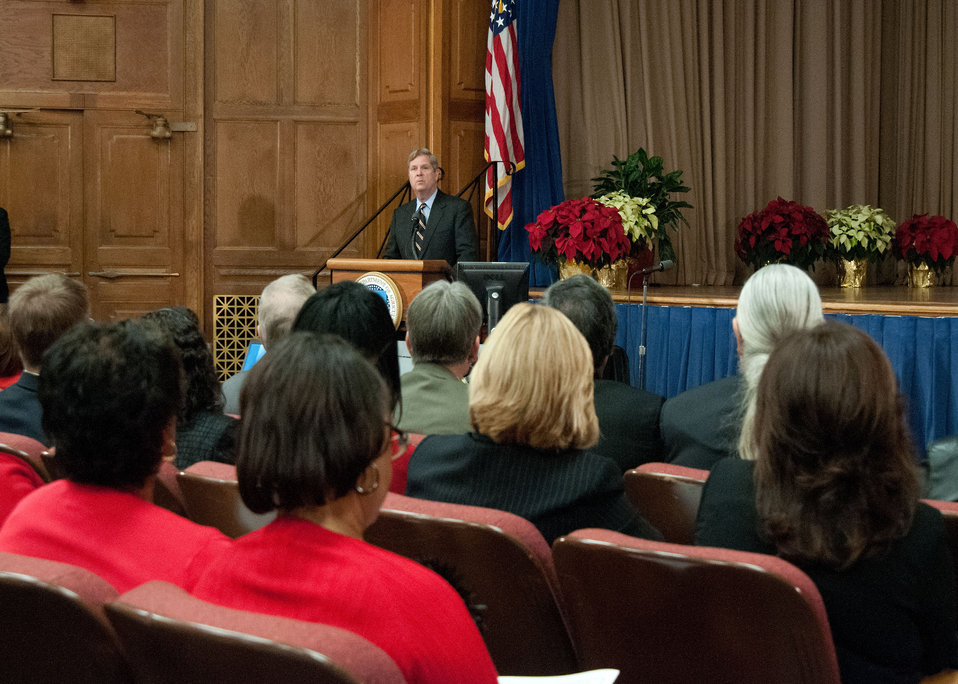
Agriculture Secretary Tom Vilsack addresses employees at the U.S. Department of Agriculture’s (USDA) Fourth Annual Cultural Transformation event held in Washington, D.C. on Tuesday, Dec. 4, 2012. The theme for the event “Faces of Cultural Transformation” Focusing on changing the way we serve our customers and cultural transformation’s benefits to employees. Secretary Vilsack spoke of the progress made during his administration’s tenure at the department and how USDA is cited as a positive example of cultural transformation in the workplace.